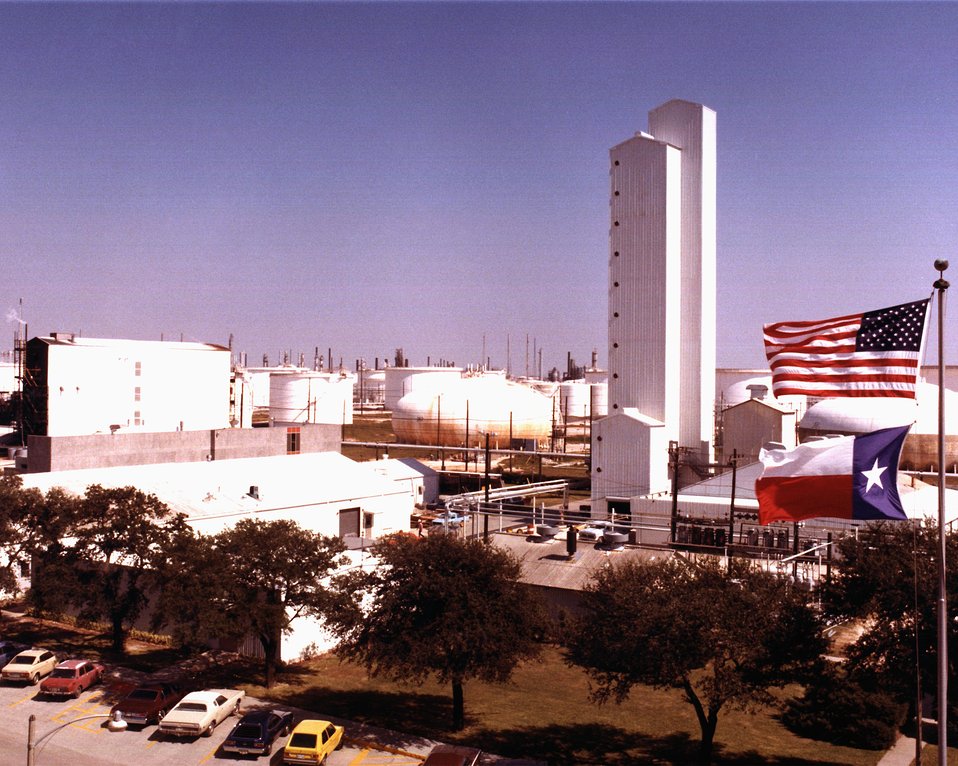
OVERALL VIEW OF THE CATALYTIC COAL GASIFICATION UNIT (RIGHT CENTER) AT EXXON'S BAYTOWN REFINERY.

THE CATALYTIC COAL GASIFICATION PROCESS IS BEING DEVELOPED IN A JOINT DOE/EXXON PROJECT AT EXXON'S RESEARCH FACILITIES IN BAYTOWN, TEXAS. UNLIKE OTHER COAL GASIFICATION PROCESSES WHICH RELY ON HIGH TEMPERATURES TO MAKE THE COAL REACT WITH STEAM, THE EXXON PROCESS USES A CHEMICAL CATALYST TO SPEED THE REACTION. THIS PROCESSING TECHNIQUE ELIMINATES THE NEED FOR OXYGEN, AN EXPENSIVE RAW MATERIAL NEEDED BY OTHER PRO- CESSES TO GENERATE THE NECESSARY HEAT. INSTEAD, THE HEAT RELEASED BY THE FORMATION OF THE SYNTHETIC GAS PROVIDES THE ENERGY FOR THE CARBON-STEAM REACTION. AN ADDITIONAL ADVANTAGE OF THE CATALYTIC PROCESS IS THAT THE GAS CAN BE RECYCLED CONTINUOUSLY UNTIL IT IS OF HIGH ENOUGH QUALITY TO BE INTRODUCED DIRECTLY INTO PIPELINES WITHOUT FURTHER UPGRADING. MINIMIZING THE DOWNSTREAM EQUIPMENT NEEDED BY OTHER PROCESSES TO MAKE THE GAS SUITABLE FOR PIPELINE TRANSPORT.